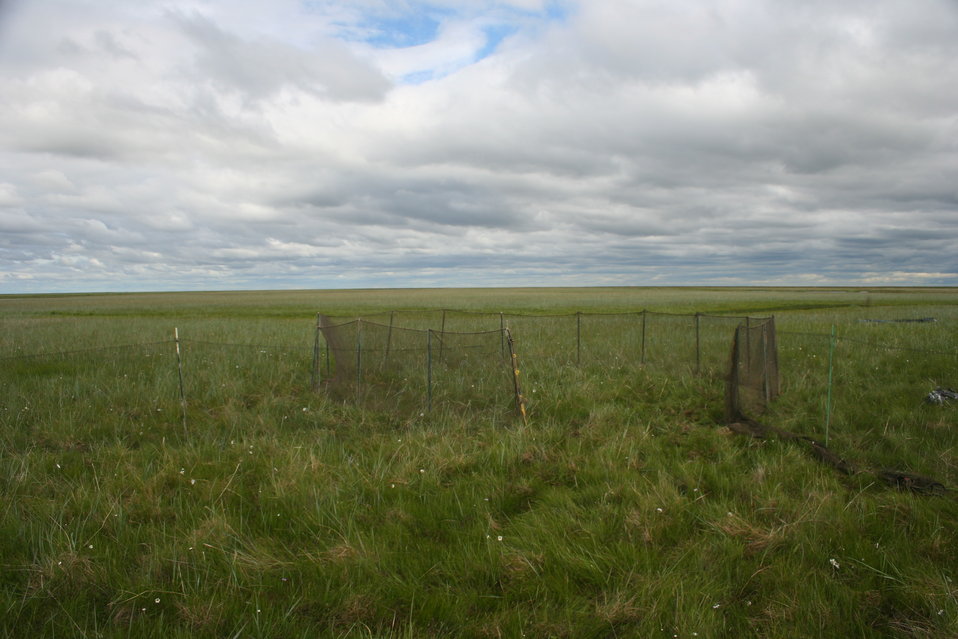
Capture Pot

Birds are pushed into the capture pot where they are held until researchers are ready to process them (i.e. age, sex, band).

USFWS Yukon Delta NWR